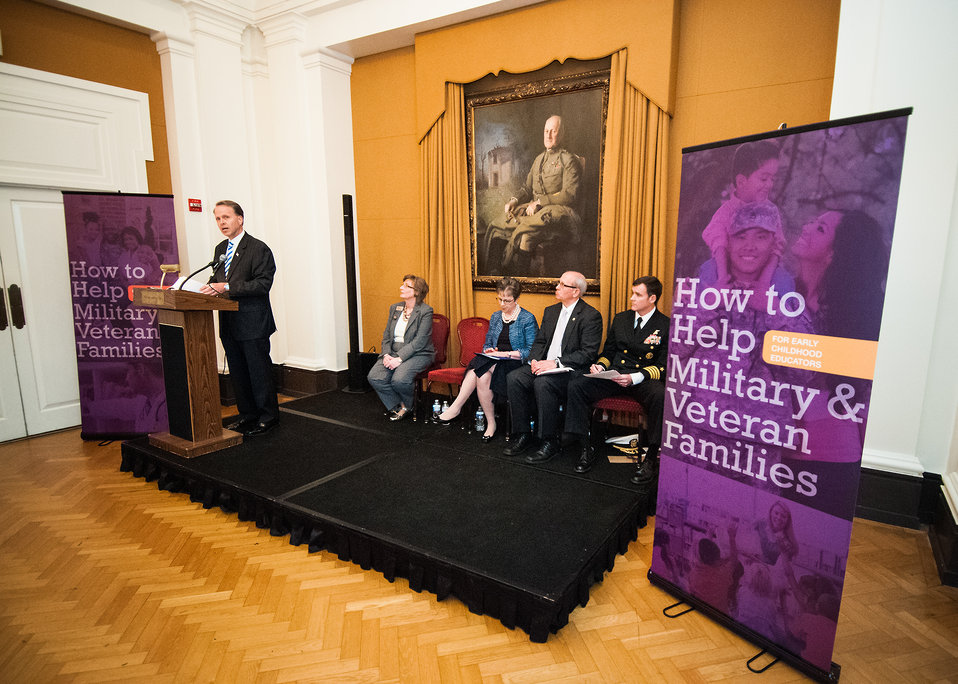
Charles Milam, Acting Assistant Secretary of Defense for Military Community and Family Policy gave remarks at the United States Department of Agriculture (USDA) and Department of Defense (DOD) jointly launch event for the 'How to Help Military and Veteran Families' - a series of publications produced jointly by the USDA, National Institute of Food and Agriculture (NIFA) and DOD at the Army-Navy Club in Washington, DC, Monday, April 15, 2013.